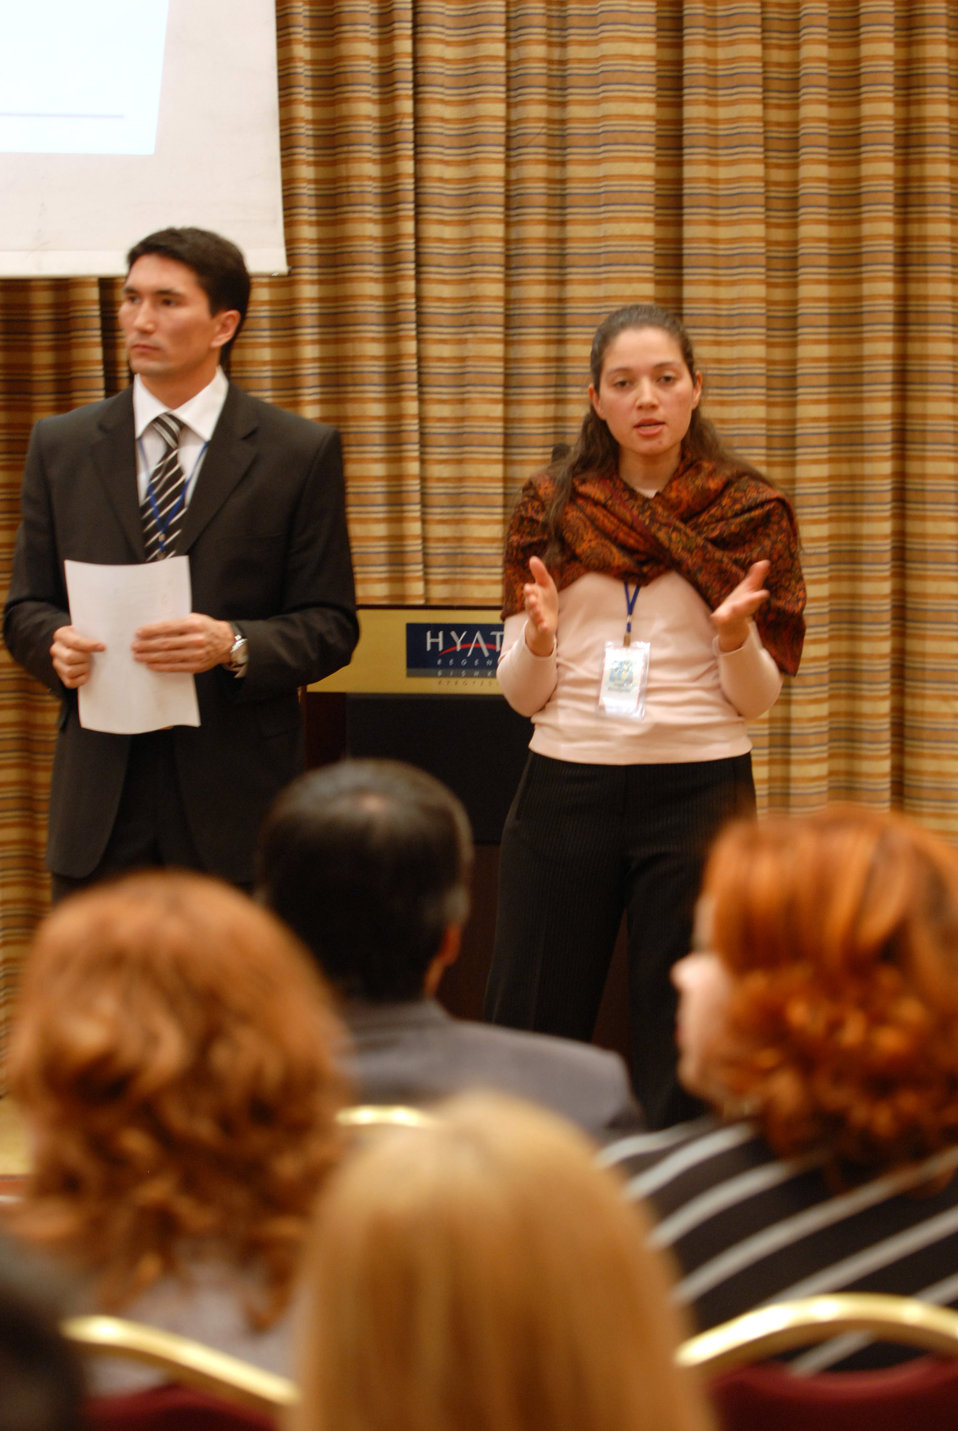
Manas officials host Vendor's Day in Kyrgyzstan

Capt. Rochelle Smith explains the process of bidding and competing for base contracts during a vendor day Nov. 13 at the Hyatt in Bishkek, Kyrgyzstan. The vendor day explained the contract process with local businesses interested in doing work at the base. Captain Smith is the 376th Expeditionary Contracting Squadron commander.